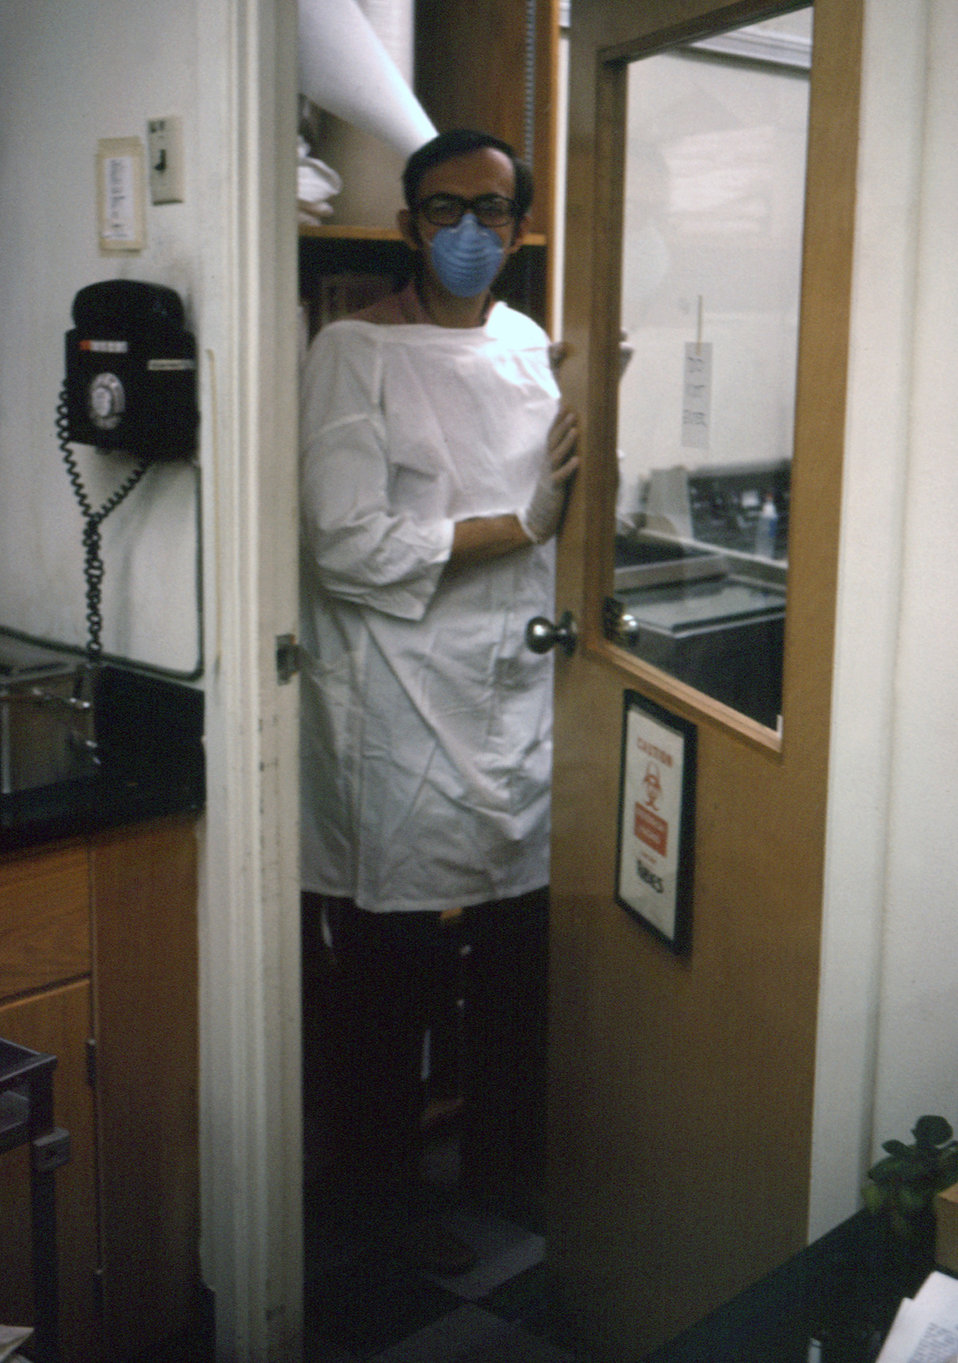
This photograph showed virologist Frederick A. Murphy, D.V.M., Ph.D., as he was entering a Biosafety Level-4 (BSL-4) laboratory in order to examine specimens collected during a 1975 Marburg outbreak.